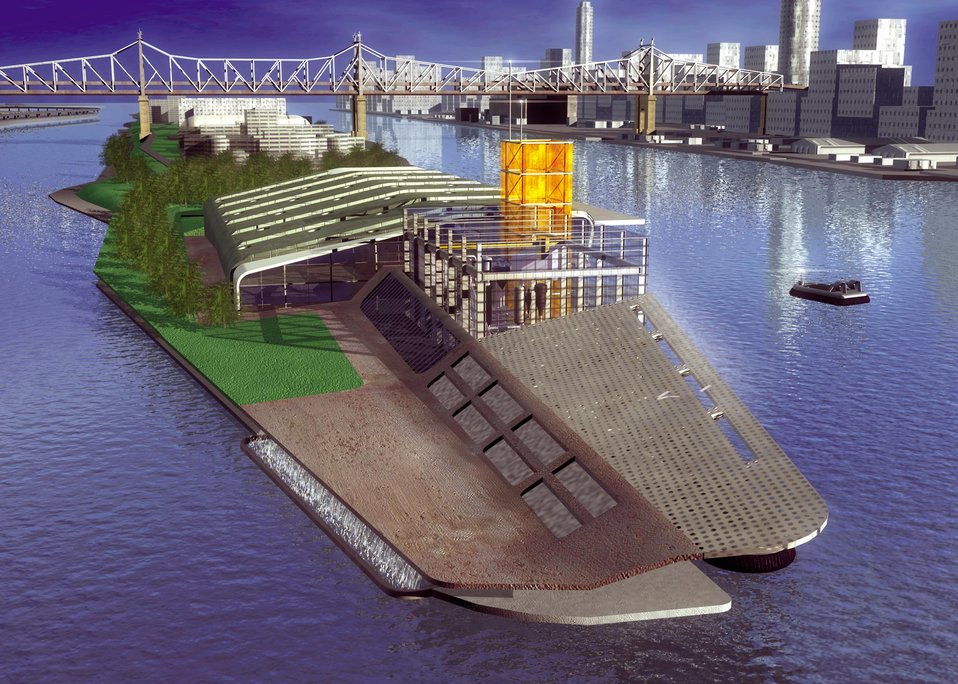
ARTISTS CONCEPT OF VISION 21 ENERGY PLANT SHOWN AT ROOSEVELT ISLAND, EAST RIVER, NEW YORK.

THE DESIGN IS PART OF AN EDUCATION PACKAGE ABOUT A REVOLUTIONARY FLEET OF FOSSIL-BASED ENERGY PLANTS CALLED VISION 21 THAT ARE HIGHLY EFFICIENT, VERY FLEXIBLE, HAVE VIRTUALLY ZERO ENVIRONMENTAL EMISSIONS, AND CAN USE A VARIETY OF FEED STOCKS AS FUEL TO PRODUCE A HOST OF ENERGY PRODUCTS INCLUDING ELECTRICITY, FUELS, HIGH-VALUE CHEMICAL, AND QUALITY HEAT/STEAM AT A COMPETITIVE PRICE. DOE'S OFFICE OF FOSSIL ENERGY EXPECTS TO GENERATE MORE VISION 21 DESIGNS DURING THE YEAR 2001.